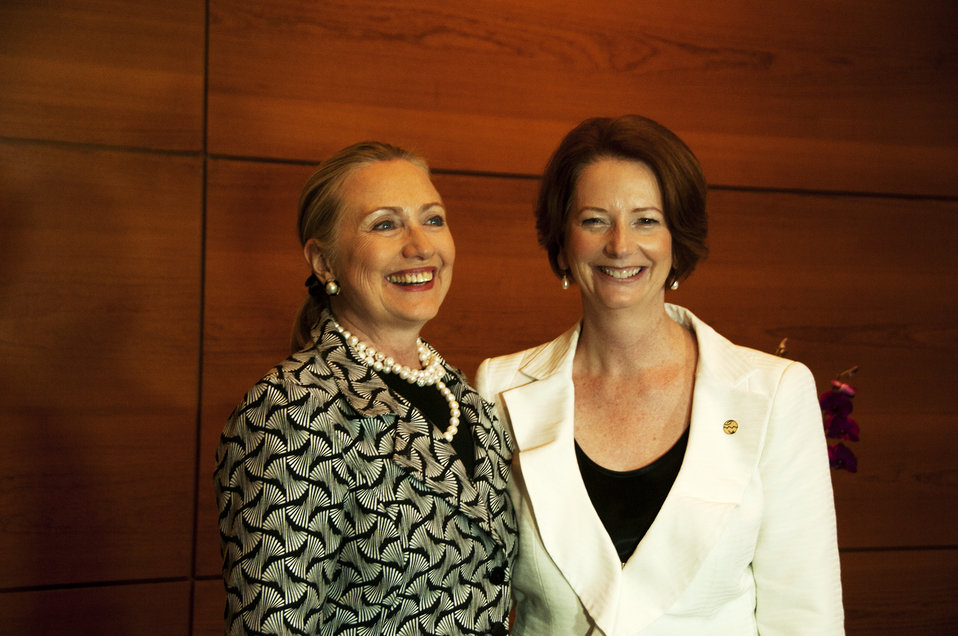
Secretary Clinton Poses for a Photo With Australian Prime Minister Gillard

U.S. Secretary of State Hillary Rodham Clinton poses for a photo with Australian Prime Minister Julia Gillard in Rio de Janeiro, Brazil during Rio 20 Conference on June 22, 2012.